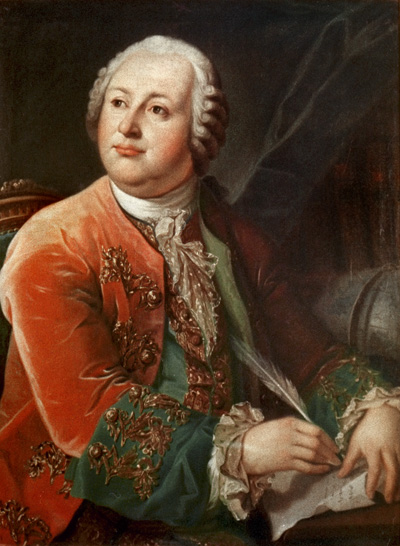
Lomonosovportrait